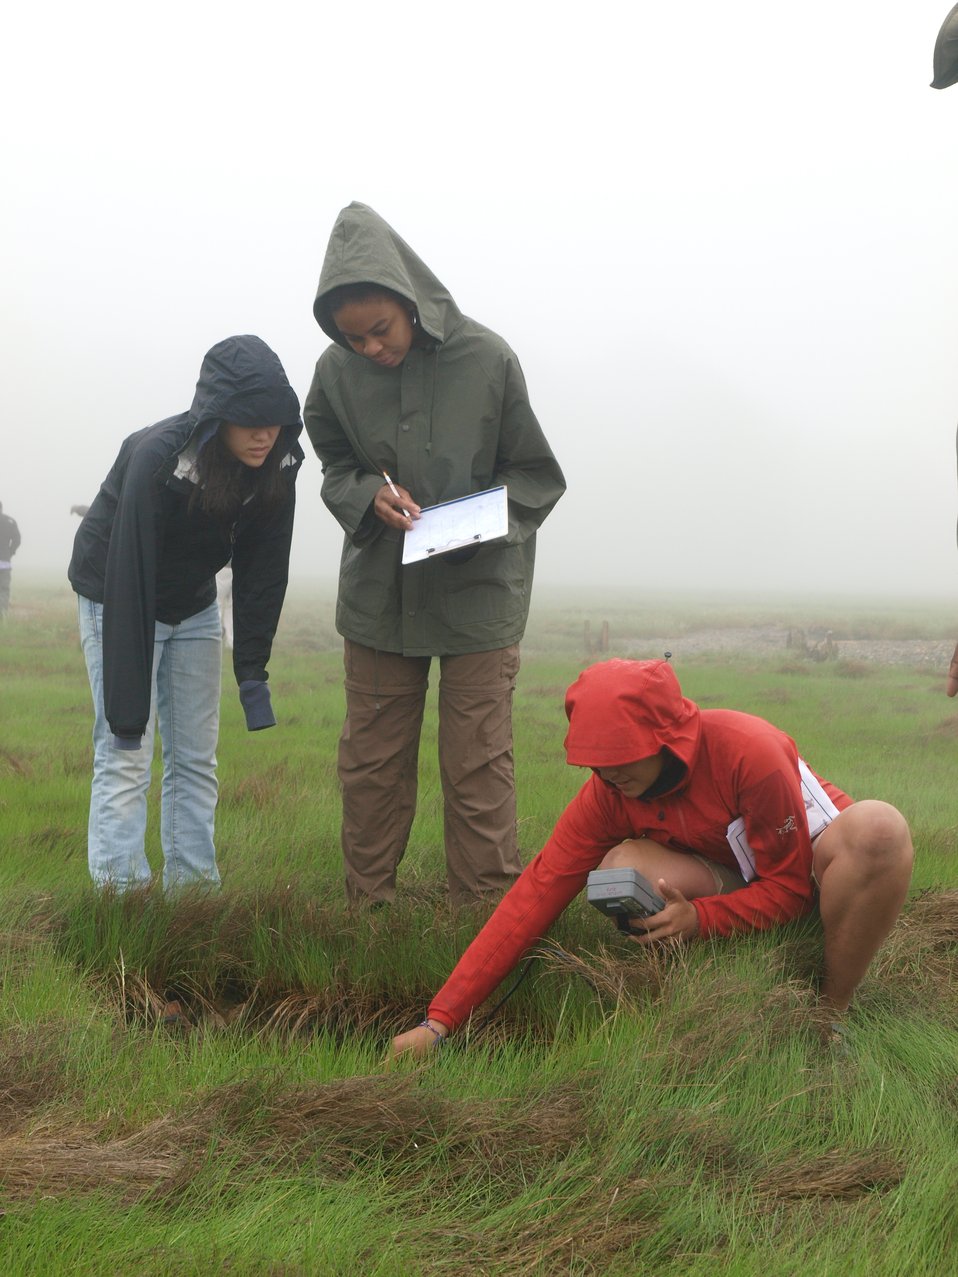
CIP Students in the field

CIP Students measure the salinity of water in a salt marsh.